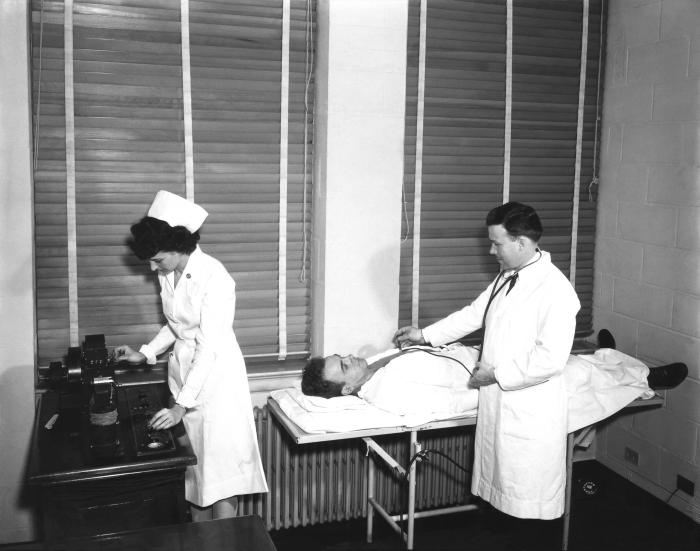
This 1950s historical photograph was provided by the Center for Disease Control's (CDC), National Institute for Occupational Safety and Health (NIOSH). It depicted an industrial plant physician and nurse attending to a worker who was lying on a gurney.